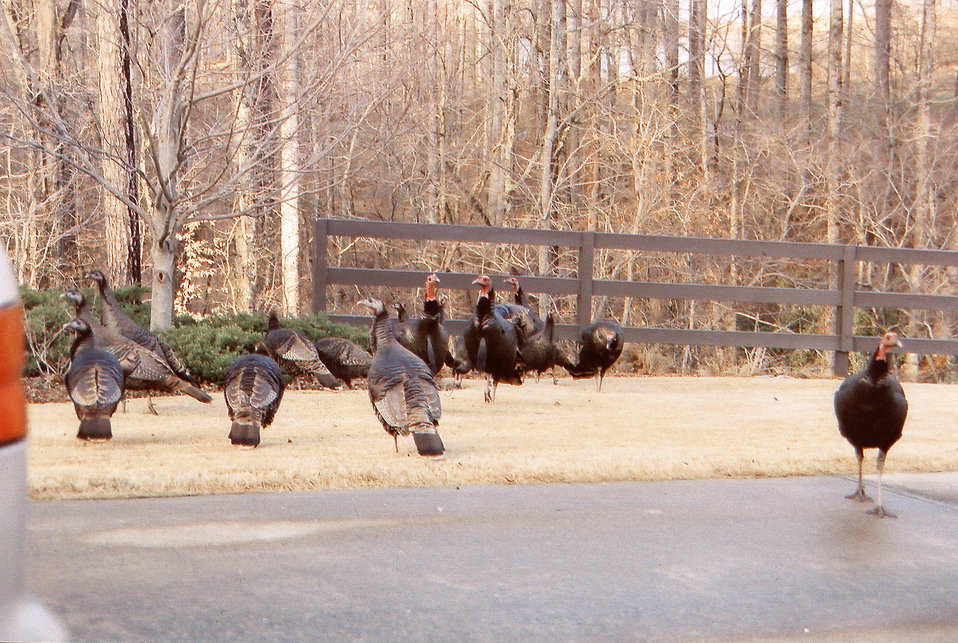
This photograph taken by a CDC, Div. of Creative Services staff member depicts what has become commonplace in his neighborhood, which is the presence of a flock of wild turkeys, Meleagris gallopavo.